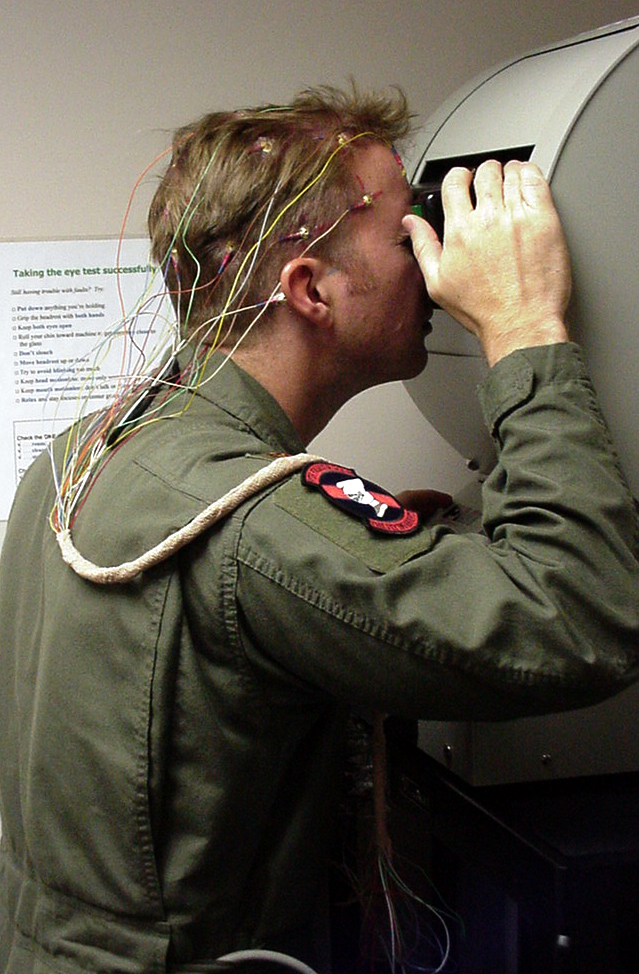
Sleep deprivation

HOLLOMAN AIR FORCE BASE, N.M. -- An F-117A Nighthawk pilot looks into a device that detects changes in pupil size and eye movements during a research study into aviator fatigue.